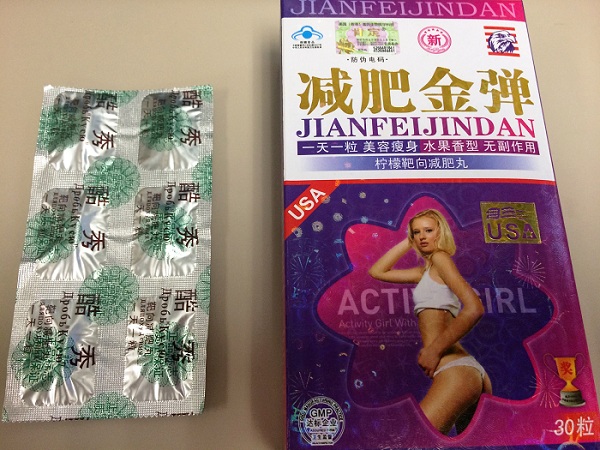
RECALLED - Reduce Weight Fruta Planta

February 4, 2014 – Product Recall – MyNicKnaxs, LLC. Issues a Voluntary Nationwide and International Recall of All Weight Loss Formulas of Reduce Weight Fruta Planta.